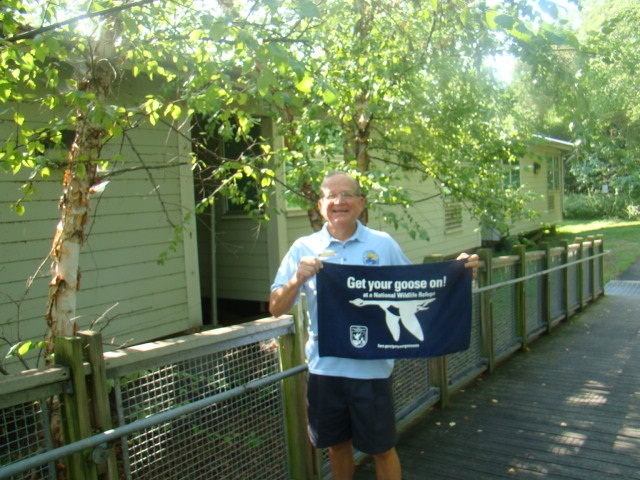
Get Your Goose On!

Volunteer Dante Cusano Gets His Goose On at the Heinz Visitor Center.